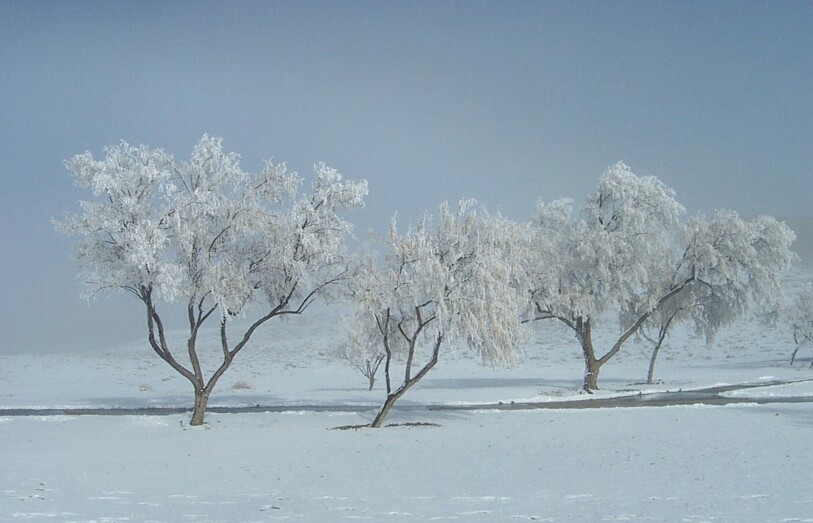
Uploaded by request of Robert Devine

Taken while we were traveling from Colorado to California.

Taken at a highway rest stop.